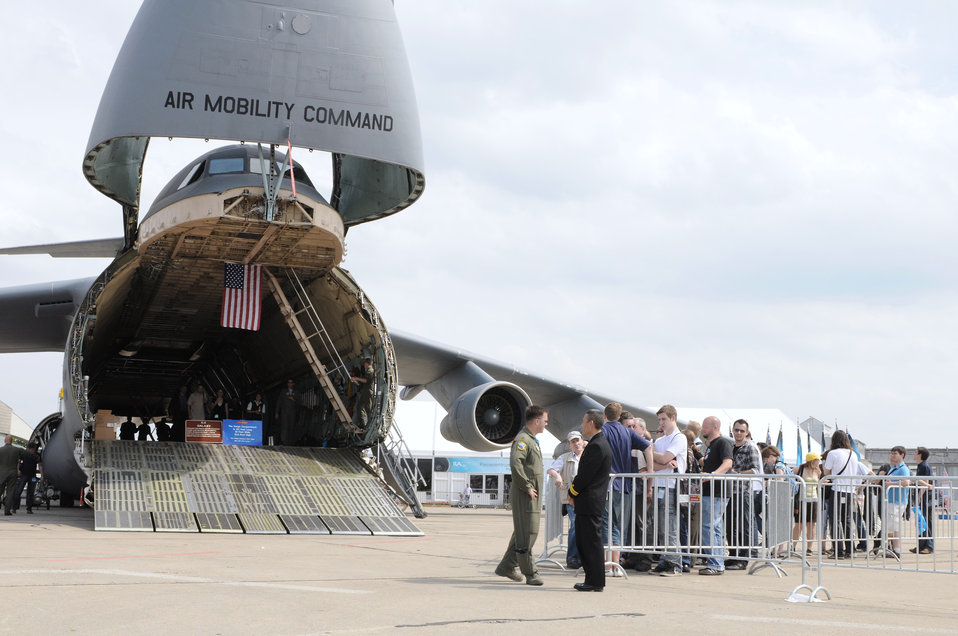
U.S. military participates in Berlin air show

Visitors line up to see the C-5 Galaxy during the 2010 Berlin International Aerospace Exhibition and Conferences Air Show June 8, 2010, at Berlin-Schonefeld Airport in Berlin. The C-5 is from the 9th Airlift Squadron at Dover Air Force Base, Del.